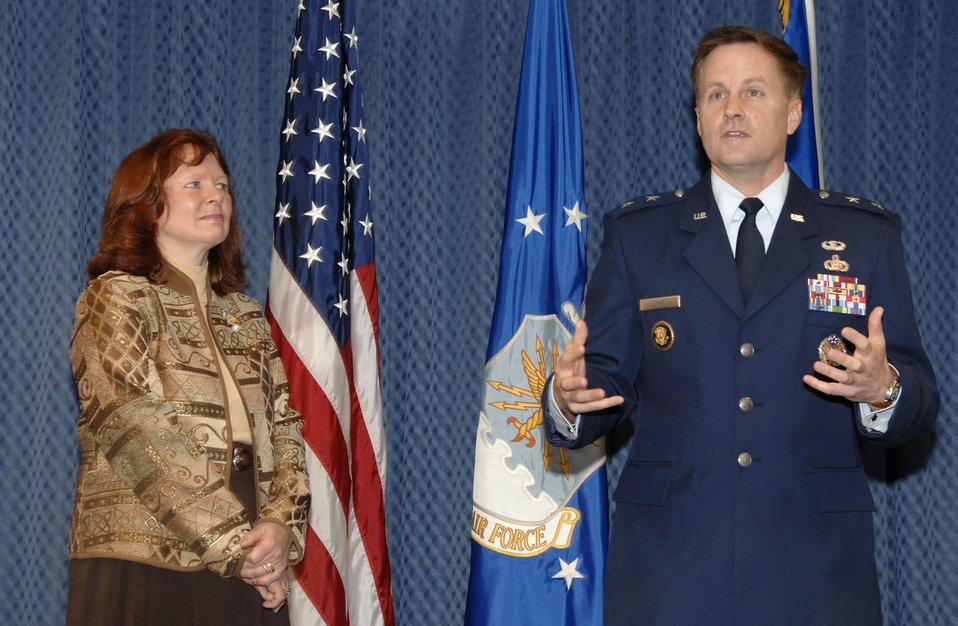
General, spouse receive O'Malley award

Maj. Gen. William T. Lord makes a few remarks after he and his wife, Cynthia, received the O'Malley Award from Air Force Chief of Staff Gen. T. Michael Moseley Nov. 15 at the Pentagon. The award is given to the wing commander and spouse who were the most involved in their community. General Lord was the base commander at Keesler Air Force Base, Miss., where he dealt with four hurricanes, including Katrina and Rita, that devasted the Gulf Coast.